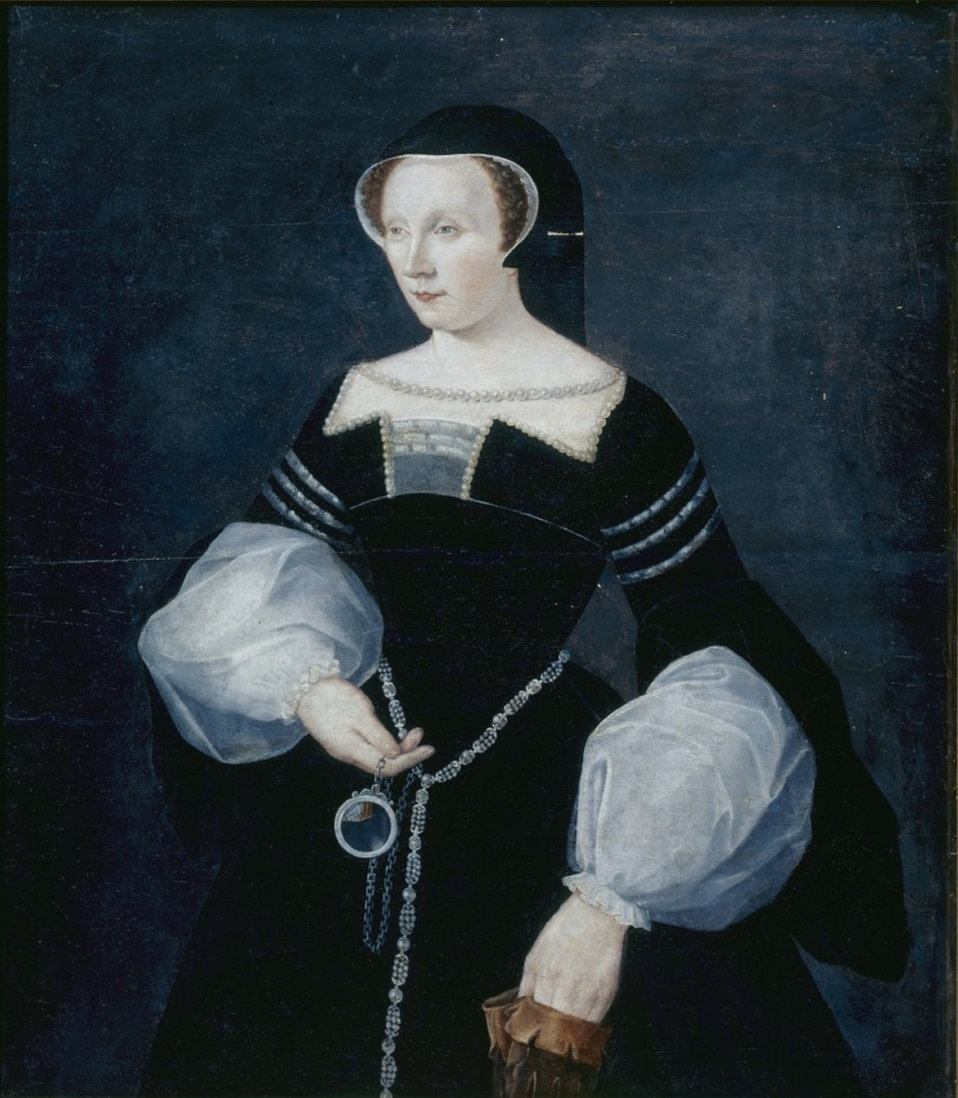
DianeDePoitiers01